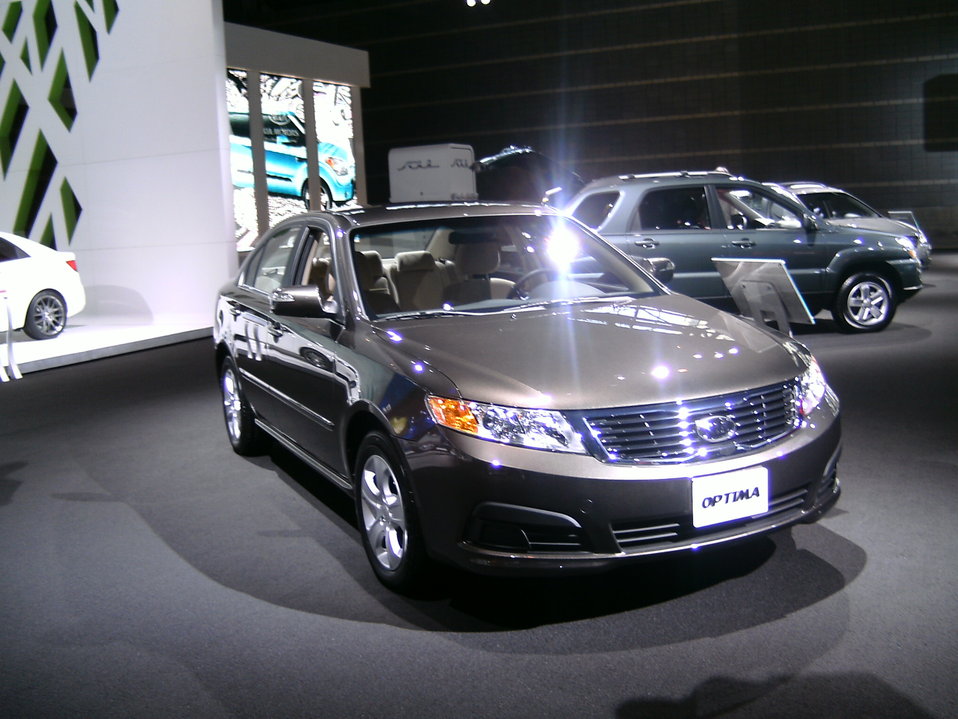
2009 Optima at the 2009 Chicago Auto Show